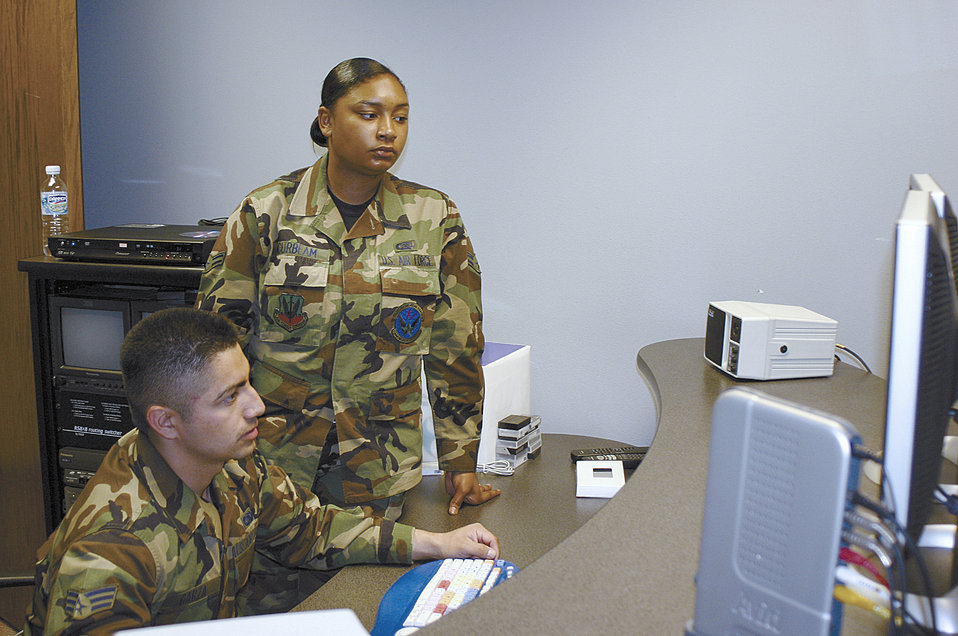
Cannon Airmen help police catch murder suspect

CANNON AIR FORCE BASE, N.M. -- Senior Airman Michael Garza and Airman 1st Class Tiffany Curbeam study video images taken from an automated teller machine. The Airmen helped local law enforcement agencies capture a double homicide suspect. They are assigned to the 27th Communications Squadron here.